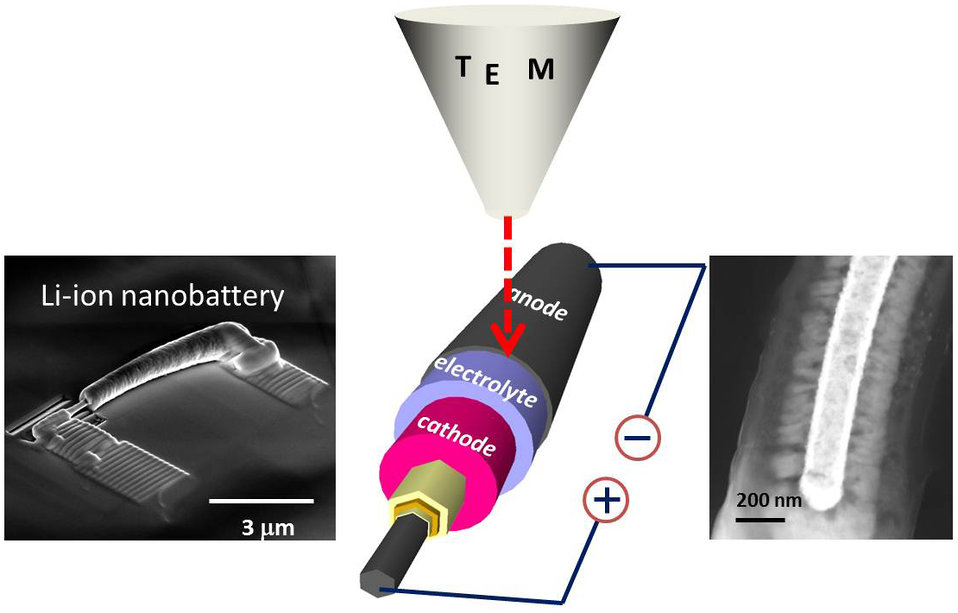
Nanosized Batteries

Using a transmission electron microscope, NIST reearchers were able to watch individual nanosized batteries with electrolytes of different thicknesses charge and discharge. The NIST team discovered that there is likely a lower limit to how thin an electrolyte layer can be made before it causes the battery to malfunction.